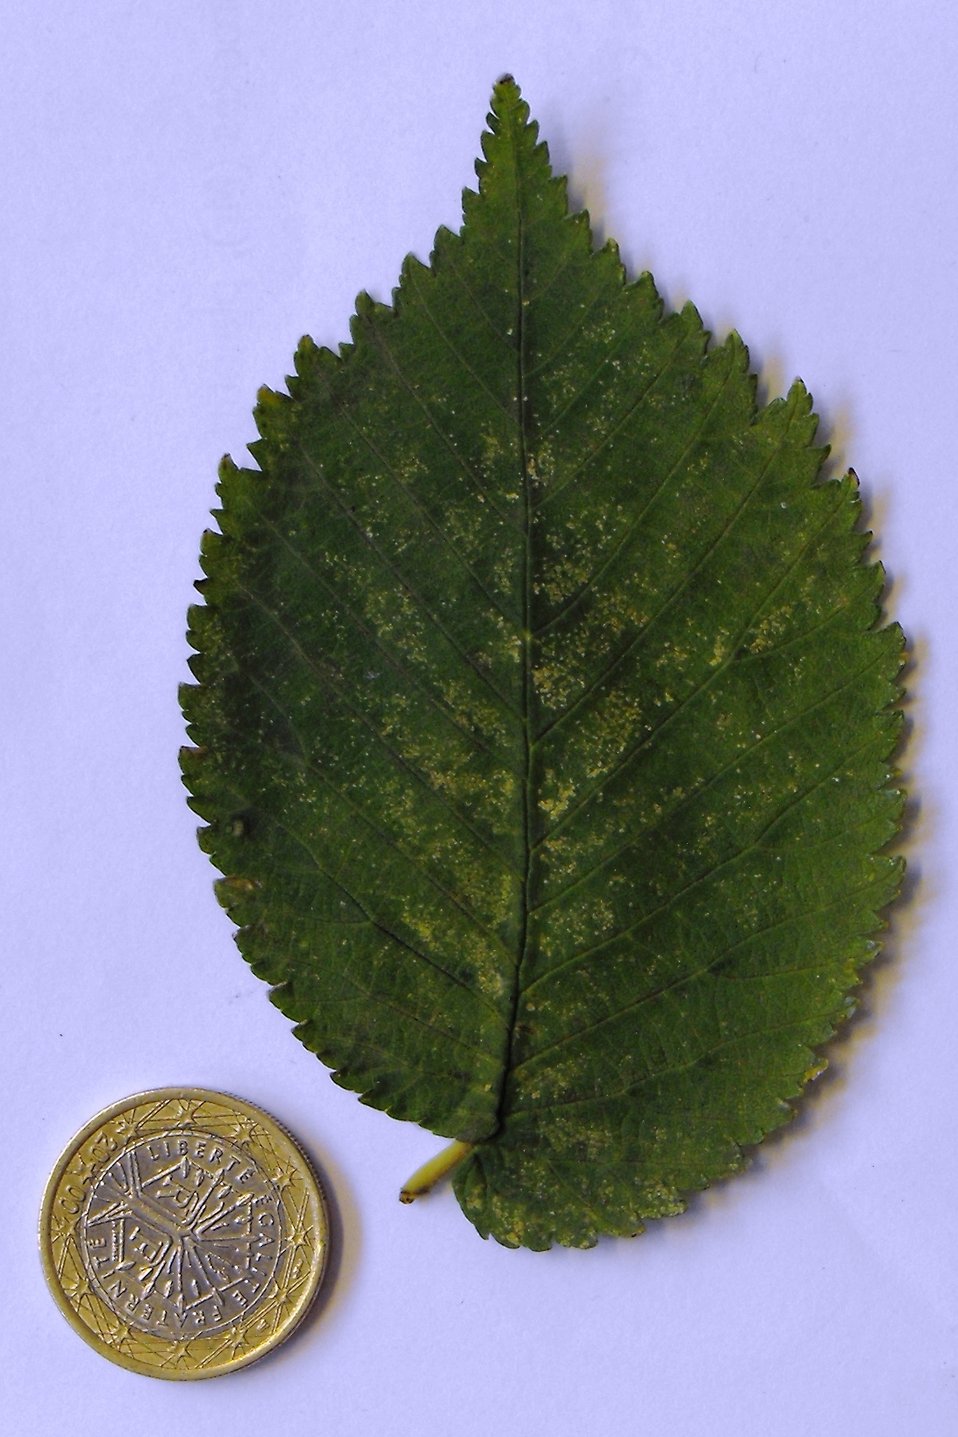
Photo of leaf of Ulmus minor growing at Horsea Island, UK